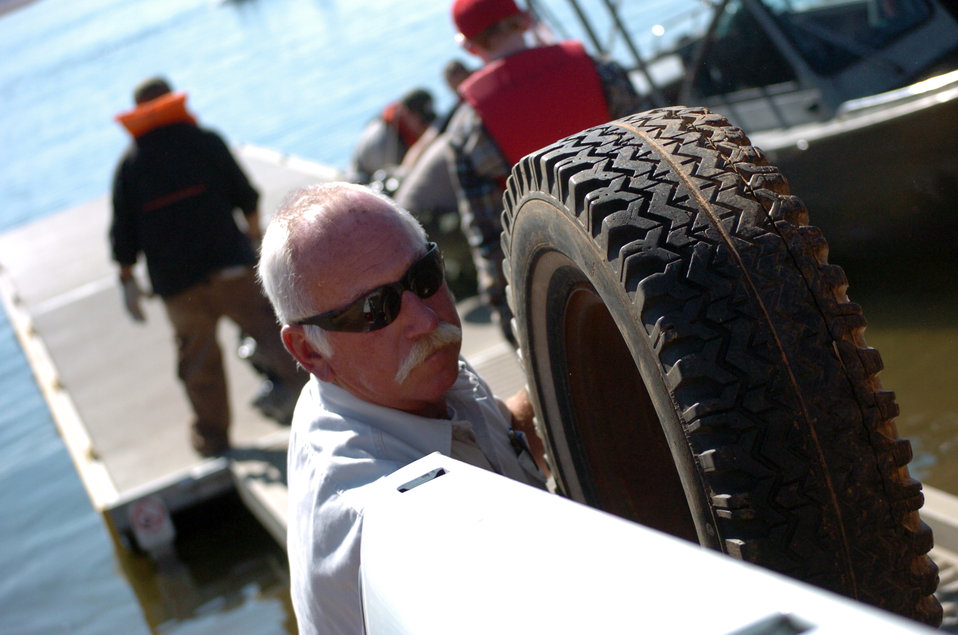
NEW HOGAN LAKE, Calif. (Sept. 25, 2010) -- Volunteers and Corps park rangers help unload trash from a boat and unto a truck during National Public Lands Day here Sept. 25. Nearly 200 volunteers were out at the lake, planting trees, picking up trash and improving trails during the 17th annual National Public Lands Day. New Hogan was one of eight U.S. Army Corps of Engineers Sacramento District recreation parks that participated in the event.